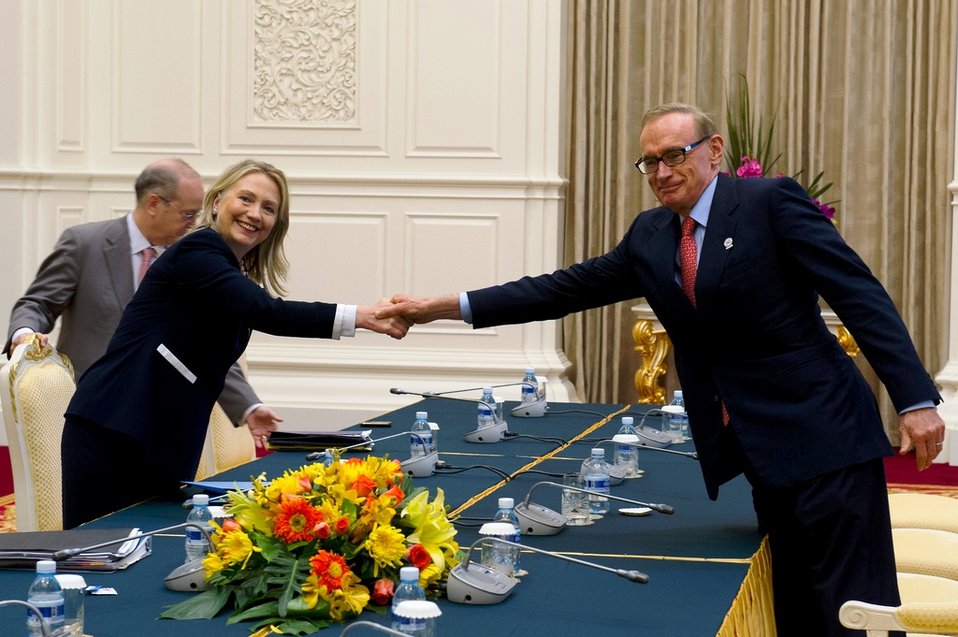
Secretary Clinton Meets With Australian Foreign Minister Carr

U.S. Secretary of State Hillary Rodham Clinton meets with Australian Foreign Minister Bob Carr in Phnom Penh, Cambodia, on July 12, 2012.